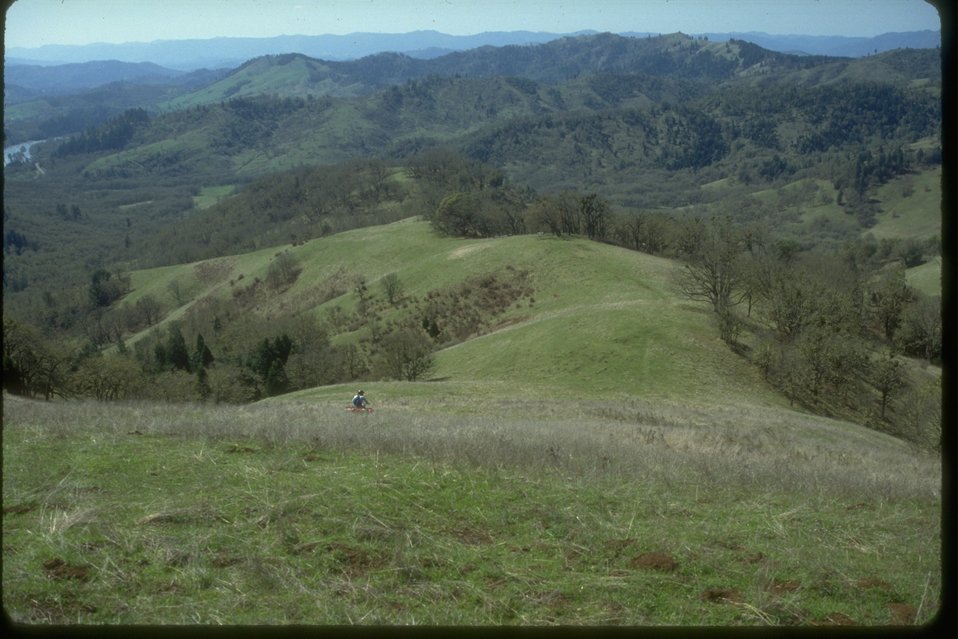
ATV rider in the North Bank Habitat Management Area.